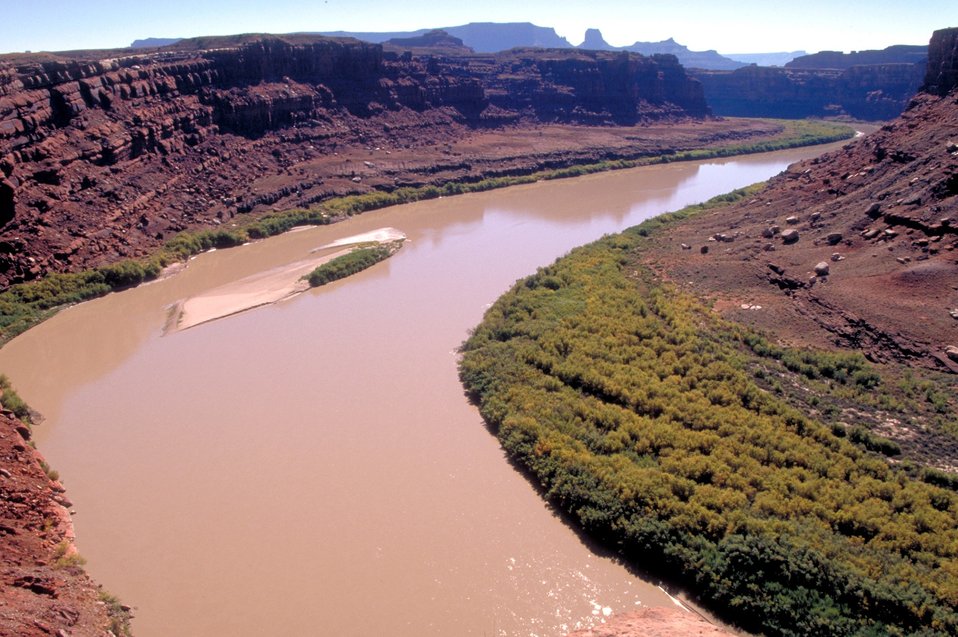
Colorado River near Moab, Utah.